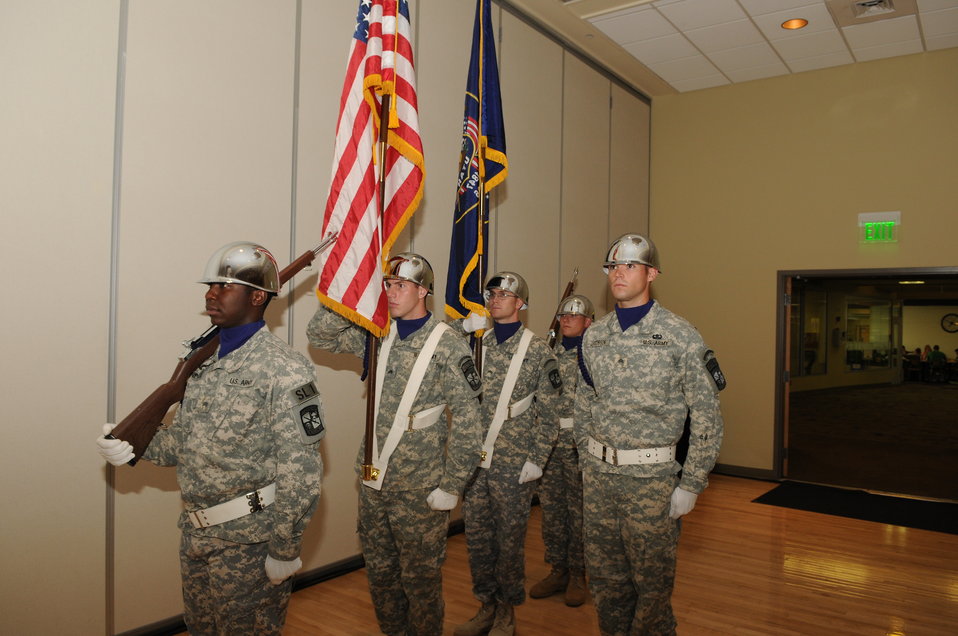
Presentation of Colors

The U.S. Fish & Wildlife Service sponsored the 2012 Federal Duck Stamp Art Contest September 28 and 29 in Ogden, Utah, at Weber State University. A panel of five judges was responsible for choosing the art work used to design the 2013-2014 Migratory Bird Hunting and Conservation Stamp.